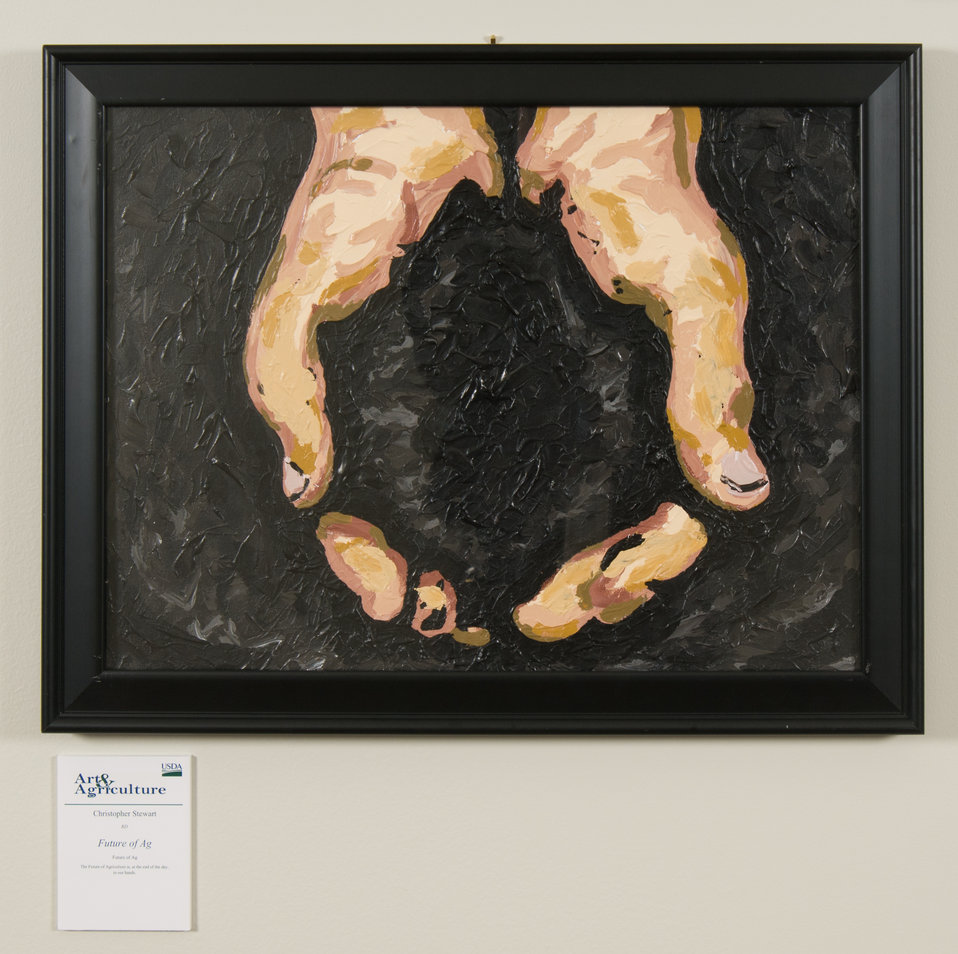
Online Viewer's Choice entries of the 2013 Art & Agriculture, Tuesday, July 9, 2013, in the South Building, Washington, D.C. Themes were expressed by employees from across the department and the contest was open to full-time and part-time USDA employees. Winning artwork will be displayed till the end of the year. U.S. Artistic expression is a creative outlet that is vital for an individual to grow and develop.